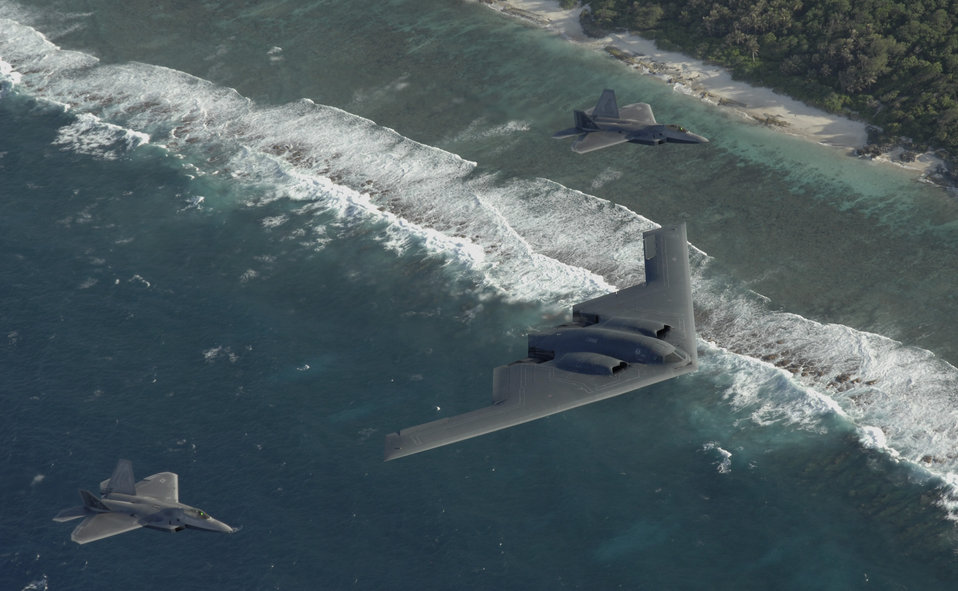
F-22s, B-2s deploy to Guam

Two F-22 Raptors and a B-2 Spirit bomber deployed to Andersen Air Force Base, Guam, fly in formation over the Pacific Ocean. The deployment to Andersen marks the first time F-22s and B-2s, the key national strategic stealth assets in the Air Force inventory, deployed together outside the continental United States.